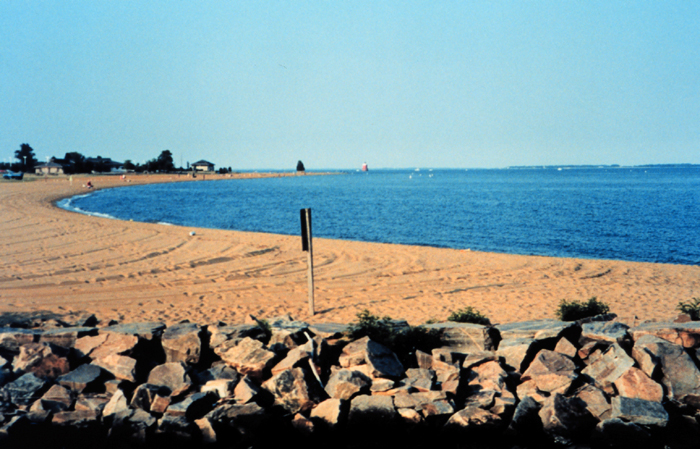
The beach at Sandy Point State Park.